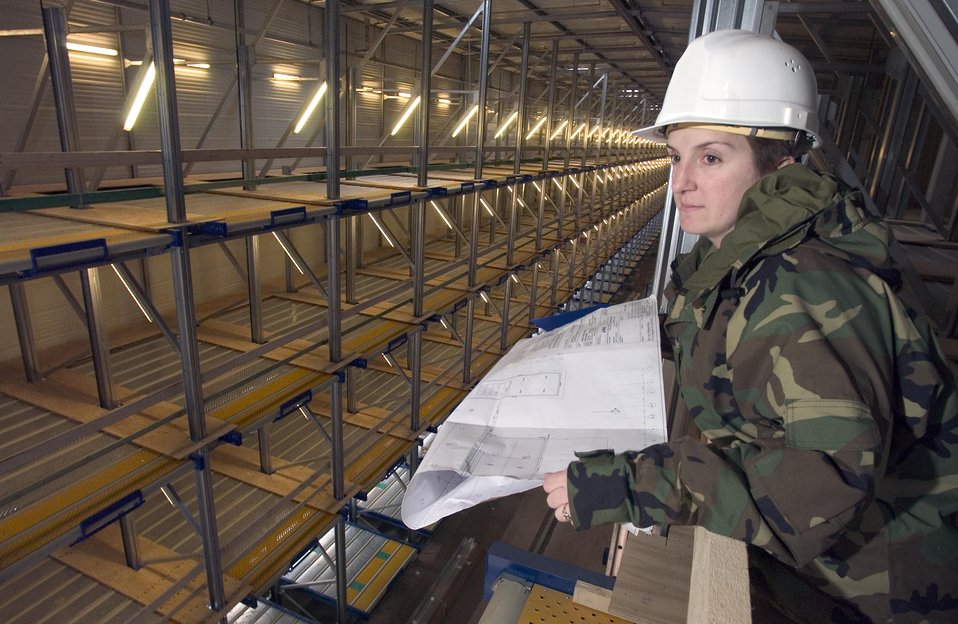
Checking the specs

RAMSTEIN AIR BASE, Germany -- Tech. Sgt. Diane Schenk confirms contractors are building the new air freight management facility according to specifications. She is a construction manager from the 435th Civil Engineer Squadron here. The facility will house more than 400 pallets when it opens in September.